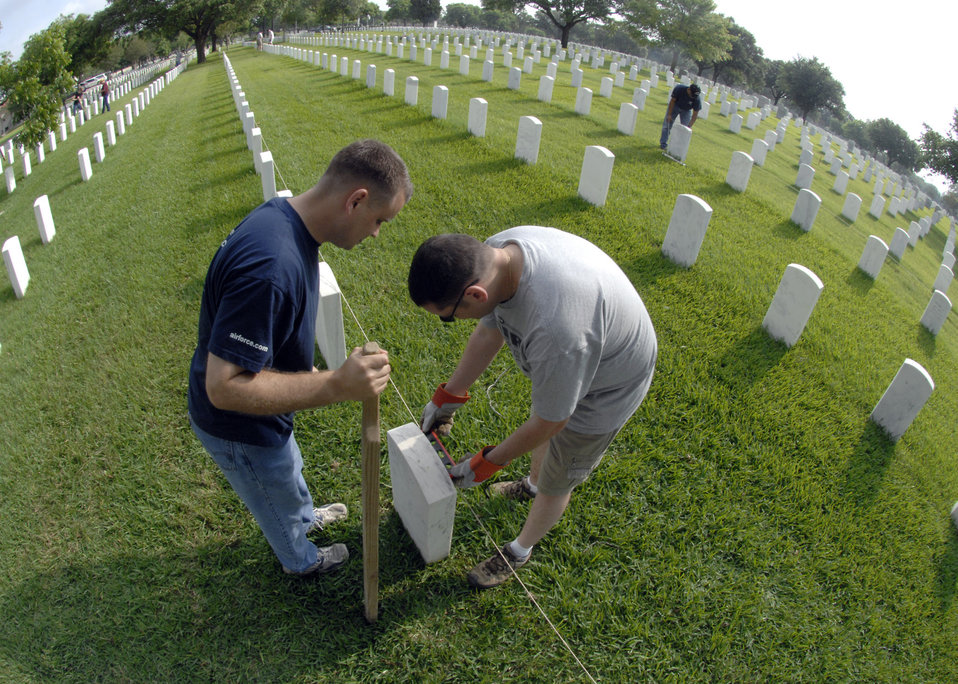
'Row on row?'

Tech. Sgts. Ryan Hoke (left) and Jason Litalien straighten headstones May 15 at the Fort Sam Houston National Cemetery in San Antonio. This process aligns and straightens all the headstones and prepares the cemetery for funerals and for the upcoming Memorial Day weekend. Airmen assigned to the Air Force News Agency in San Antonio spent the day adjusting the headstones.